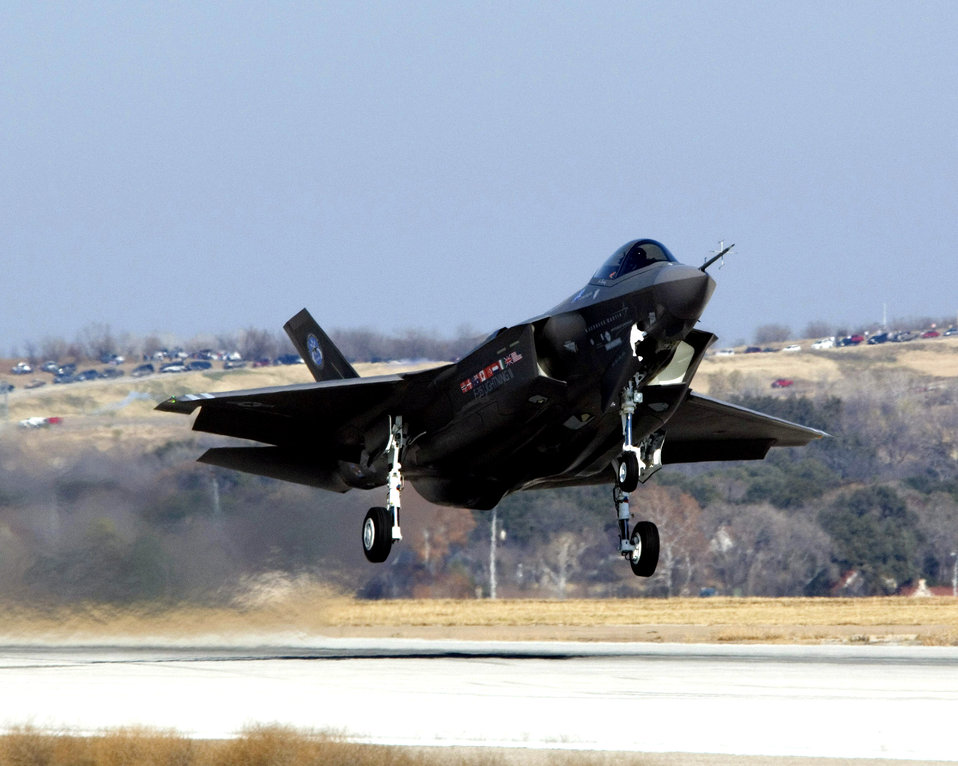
Task force readies Eglin for F-35 mission

An F-35 Lightning II the Joint Strike Fighter, takes off for its first flight as part of system development testing Dec. 15, 2006, in Fort Worth, Texas. Three variants of the aircraft are being developed for the Air Force, Marine Corps and Navy.